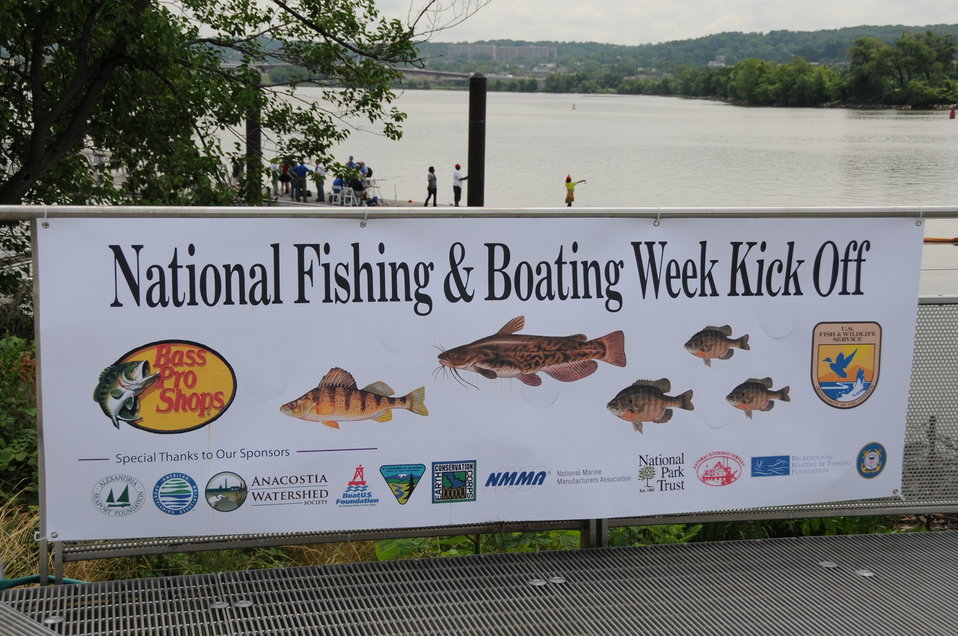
2013 National Fishing and Boating Week

Local students prepare to enjoy fishing at the annual kick-off of National Fishing and Boating Week on the Anacostia River in Washington D.C.